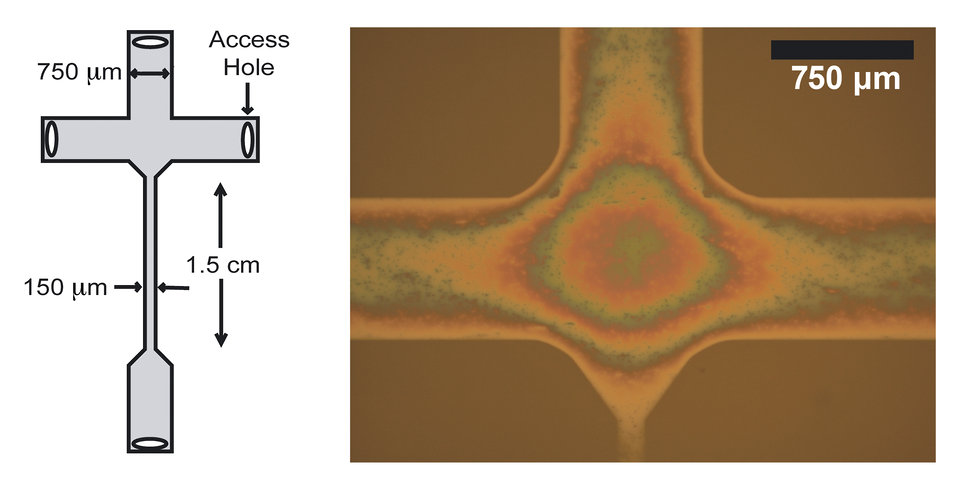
Nanoglassblowing

Left: Schematic of a T-junction nanofluidic device with a 'nanoglassblown' funnel-shaped entrance to a nanochannel. The funnel tapers down to 150 micrometers (about the diameter of a human hair) at the nanochannel entrance.
Right: Photomicrograph of the T-junction with the first section of the nanochannel visible at the bottom. The colors are a white light interference pattern caused by the changing depth of the curved glass funnel.